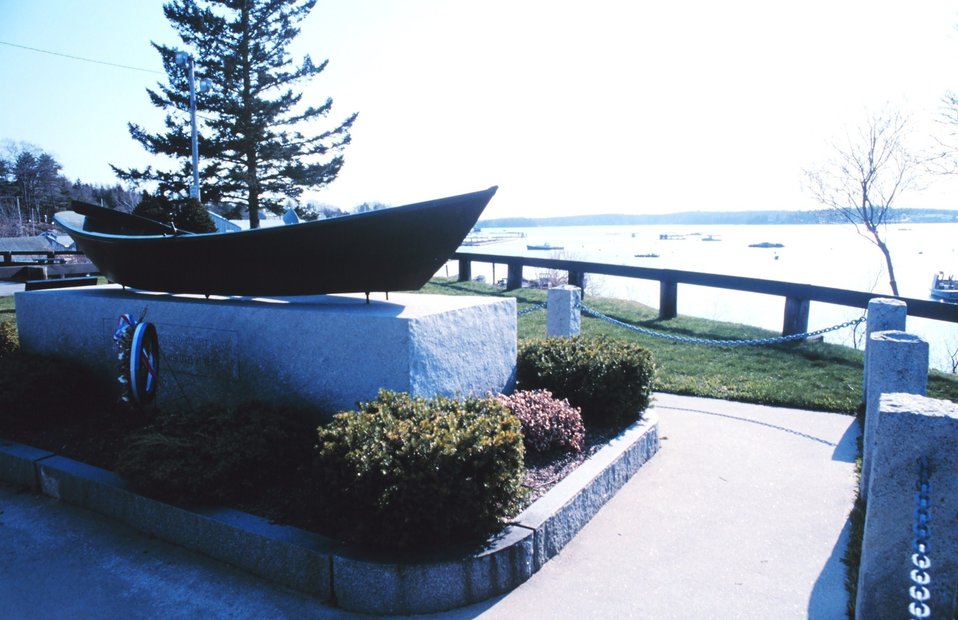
A Memorial to Fishermen.